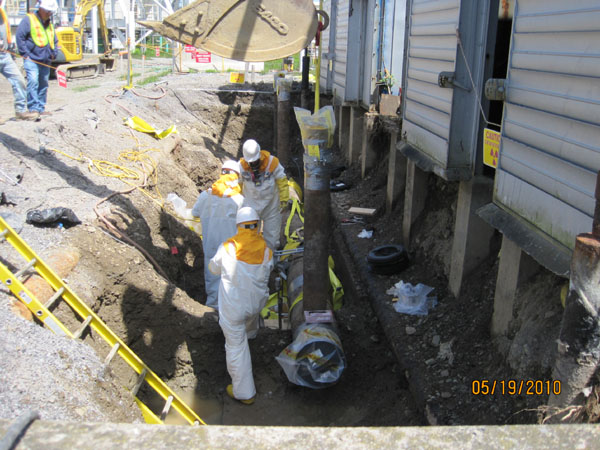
Recovery Act Funds New Equipment to Keep Waste Tanks Dry

With funding from the Recovery Act, workers at the West Valley Demonstration Project (WVDP) are installing a tank and vault drying system to evaporate the remaining liquids in the tanks and vaults, and maintain a low relative humidity to limit tank corrosion.

With an operational design life of 30 years, this system will provide needed time for WVDP officials to make and implement long-term decisions about the decommissioning of the Waste Tank Farm.